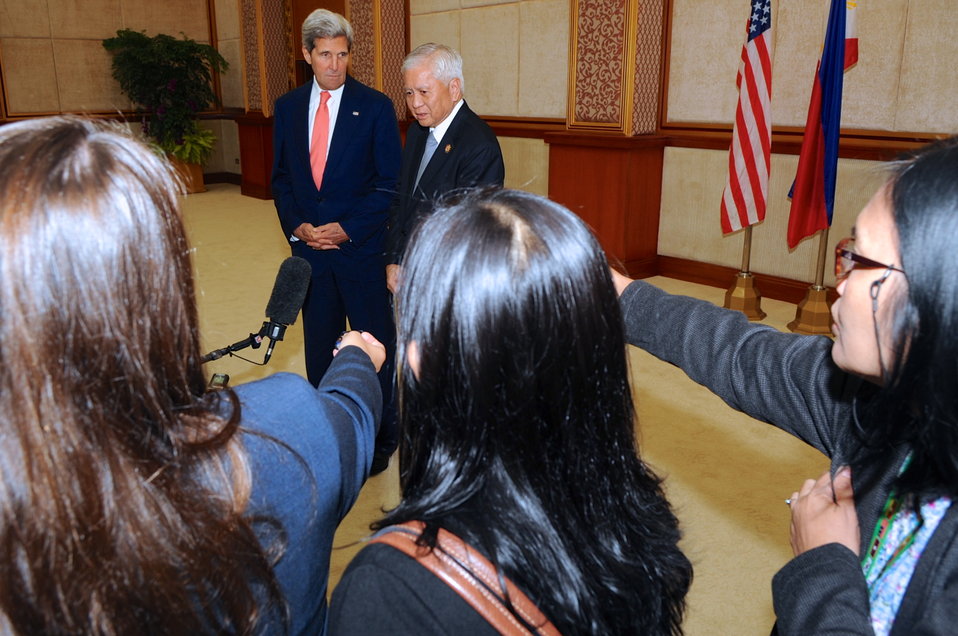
Philippines Foreign Minister del Rosario Addresses Reporters With Secretary Kerry

Foreign Minister Albert del Rosario of the Philippines and U.S. Secretary of State John Kerry address reporters in Bandar Seri Begawan, Brunei, on October 10, 2013, after the Secretary announced he was postponing a visit to Manila because of an approaching typhoon.